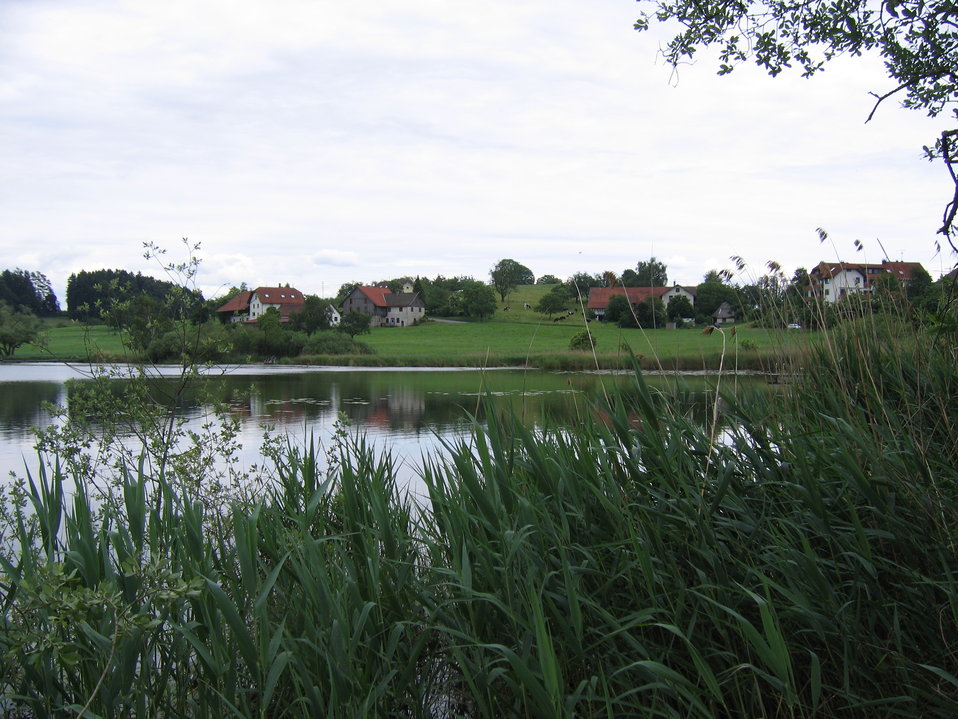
Deutsch: D-Tettnang: Muttelsee